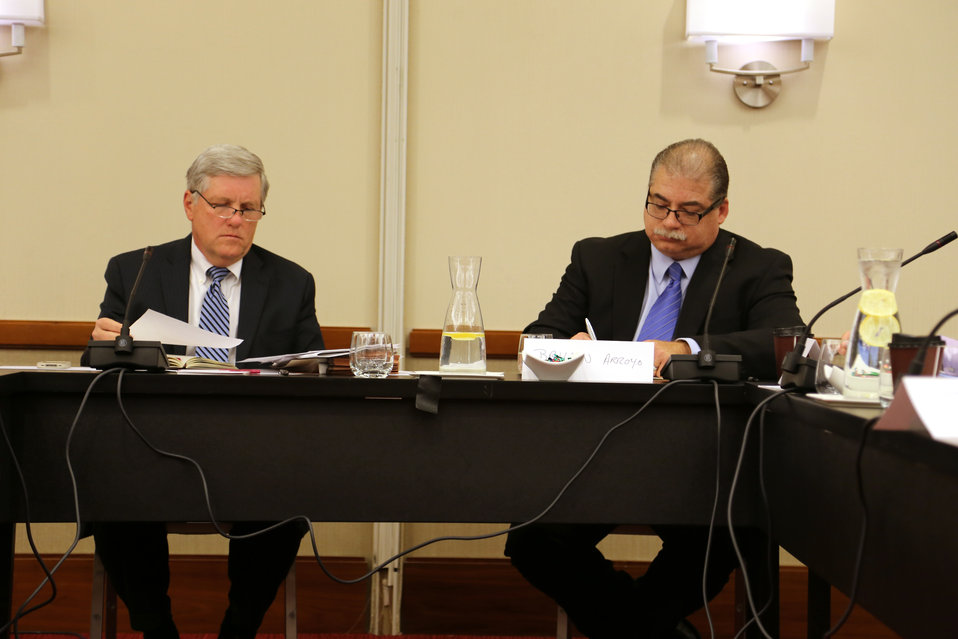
Wildlife Trafficking Advisory Council Meeting March 20, 2014